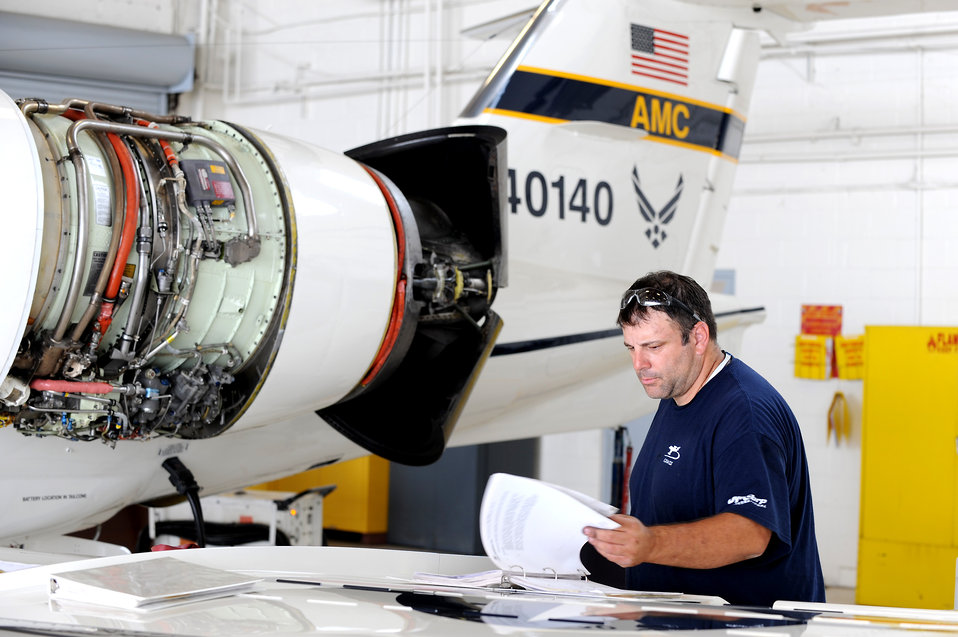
C-21 phase inspection

Eric Bollinger checks his technical orders while working on a C-21 during a phase inspection Sept. 15, 2010, at Scott Air Force Base, Ill.. Mr. Bollinger is a contractor with DynCorp International.